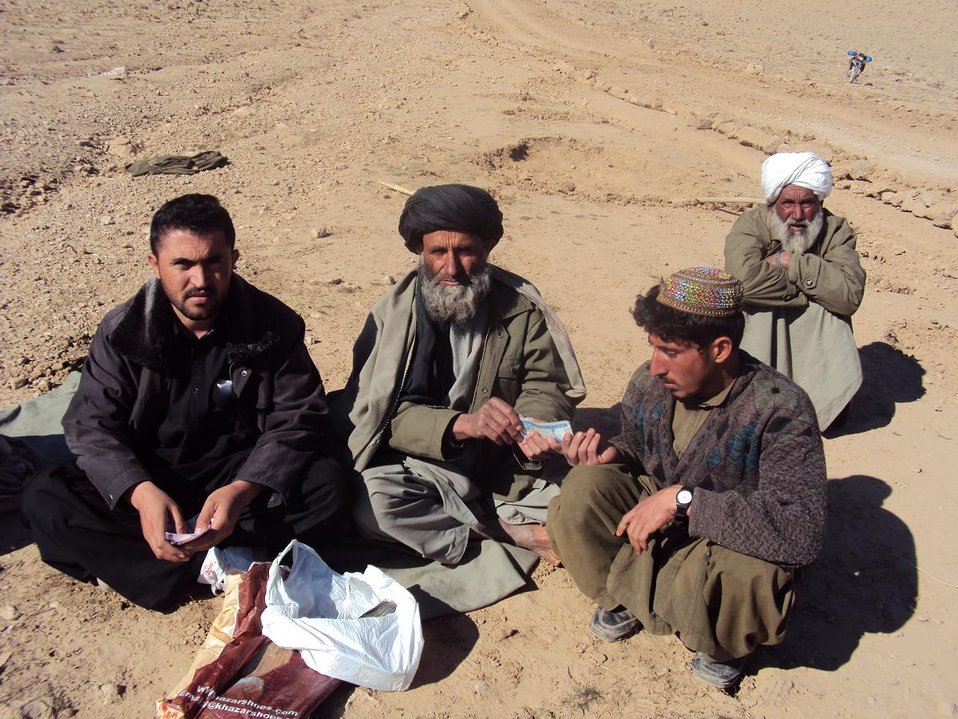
payments by leaderwith LGCD TKstaff present